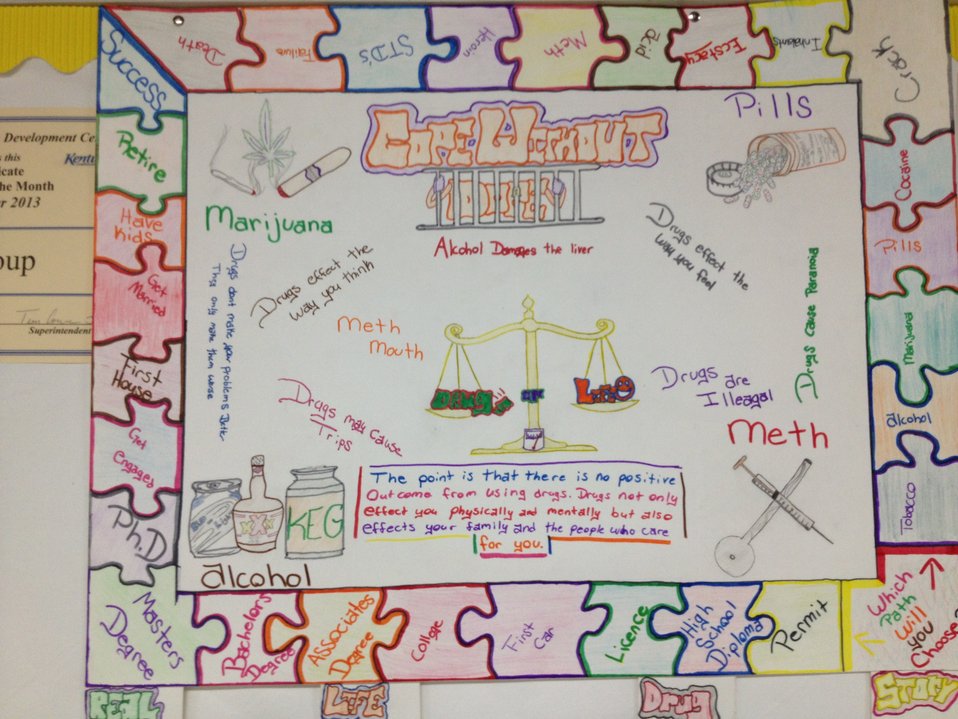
Monticello's NDFW Poster Contest Winner 2014

National Drug Facts Week 2014 Poster Contest Winner at Lake Cumberland Youth Development Center, Monticello KY.